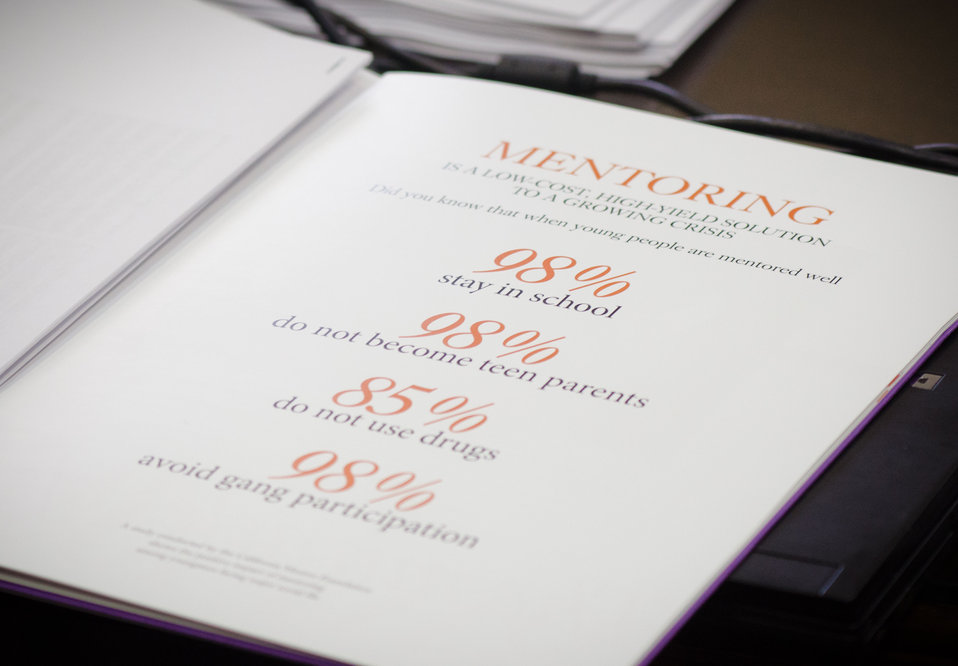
Important benefits of mentoring, from National CARES Mentoring Movement founder and Editor-in-Chief Emeritus, Essence magazine, Susan Taylor met for a cross-departmental discussion with Department of Agriculture and Department of Energy personnel in the Whitten Building, U.S. Department of Agriculture, in Washington, D.C., on Tuesday, February 28, 2012. This not-for-profit organization is dedicated to recruiting and connecting mentors with local youth and mentoring organizations to help guide under-resourced children to academic and social success across the country. This discussion provided a continuation of the White House Policy in Action conference that took place in November 2011. The focus of the discussion was about how existing federal programs and administration priorities can be leveraged with her organization, especially as it relates to science, technology, engineering and mathematics (STEM) literacy, education and rural youth.